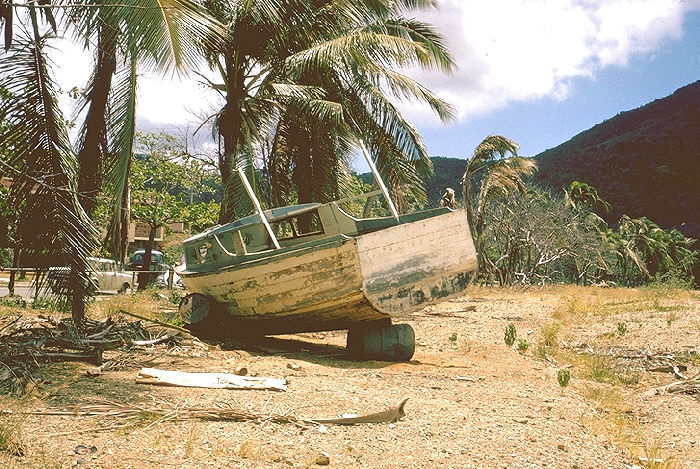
Old boat, Aedes aegypti mosquito breeding site., Virgin Islands.